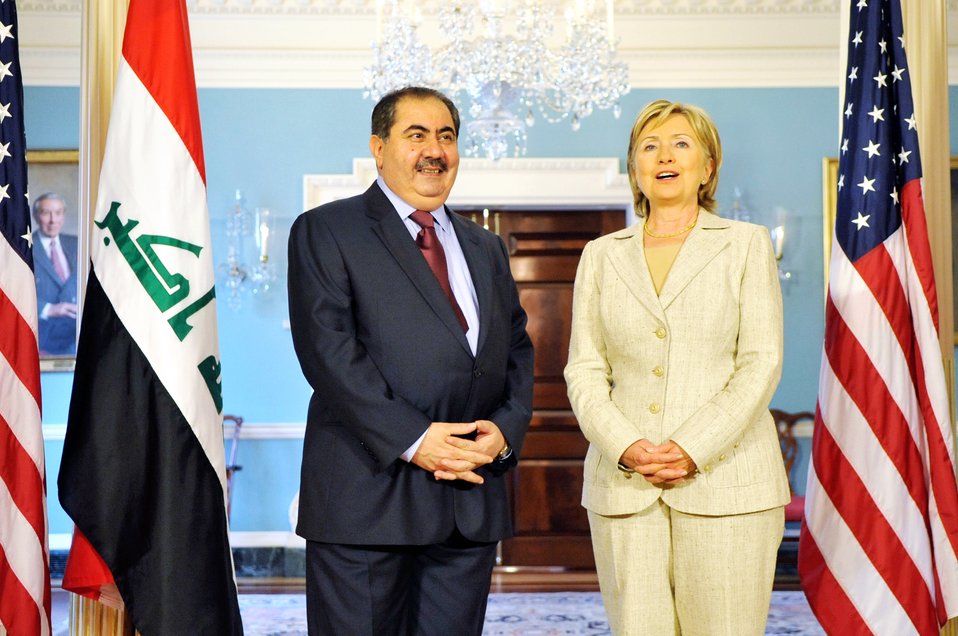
Secretary Clinton Meets With Iraqi Foreign Minister

U.S. Secretary of State Clinton holds a bilateral meeting with His Excellency Hoshyar Zebari, Minister of Foreign Affairs of the Republic of Iraq at the U.S. Department of State in Washington, DC July 16, 2009.